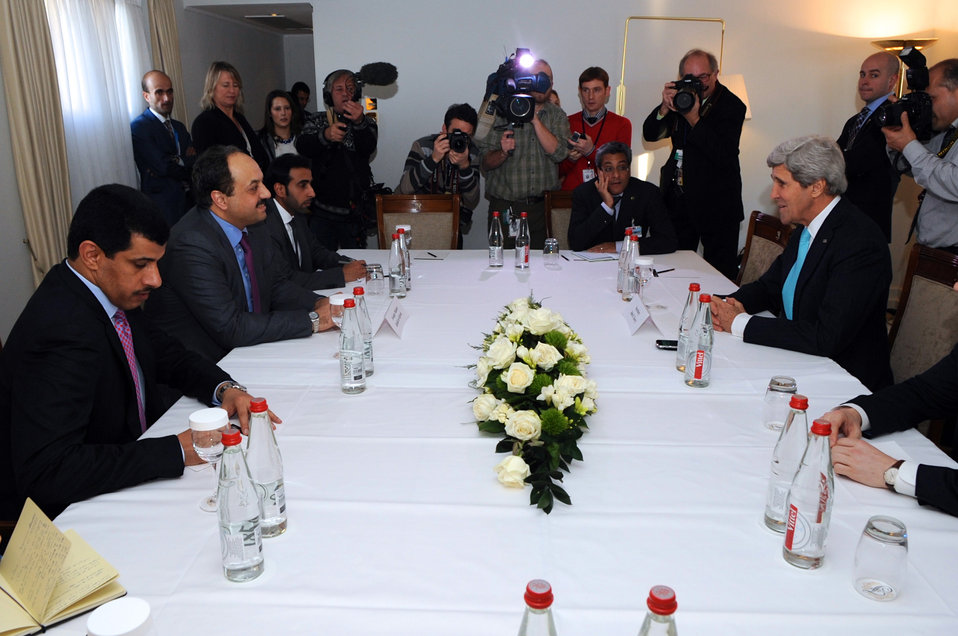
Secretary Kerry Holds a Bilateral Discussion With Qatari Foreign Minister al-Attiyah

U.S. Secretary of State John Kerry chats with Qatari Foreign Minister Khalid al-Attiyah at the outset of a bilateral discussion on the margins of the Geneva II conference in Montreux, Switzerland, on January 22, 2014.